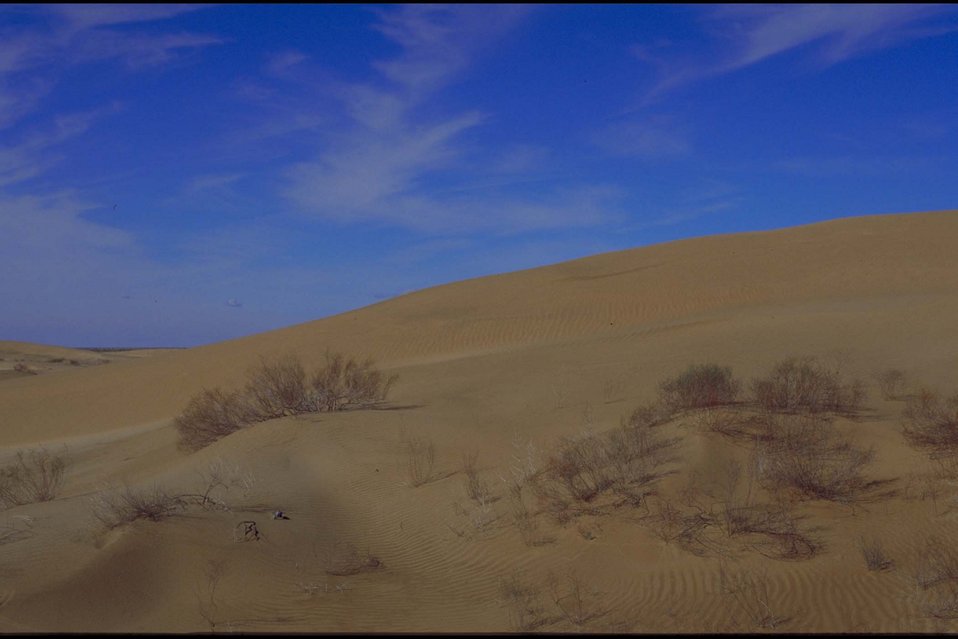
Beautiful sand dunes in the California Desert